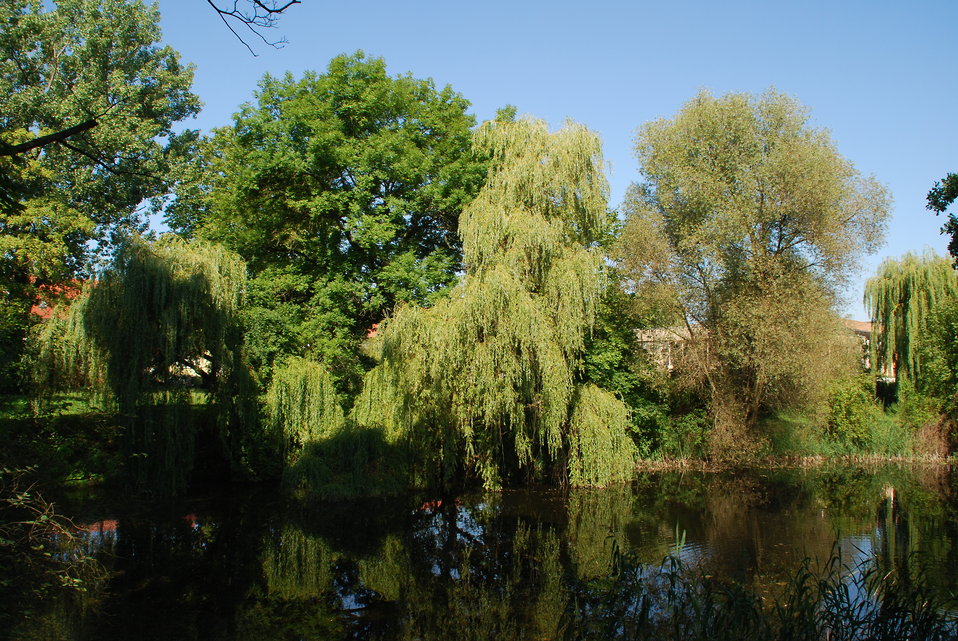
Theaterteich in Frankfurt (Oder), am ehemaligen Kleist-Theater, Friedrich-Ebert-Straße